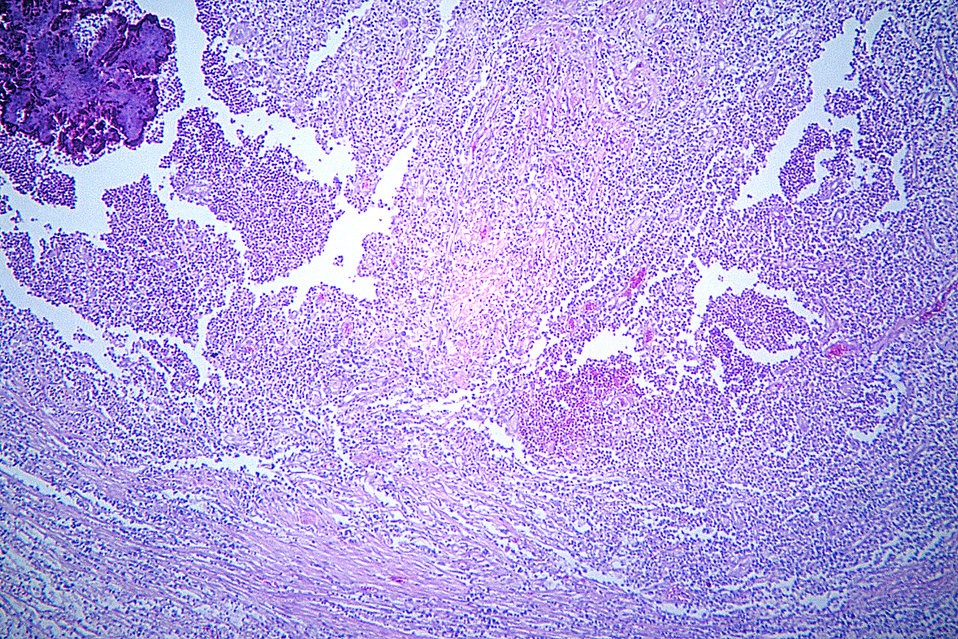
A photomicrograph depicting the histopathology associated with pulmonary actinomycosis.